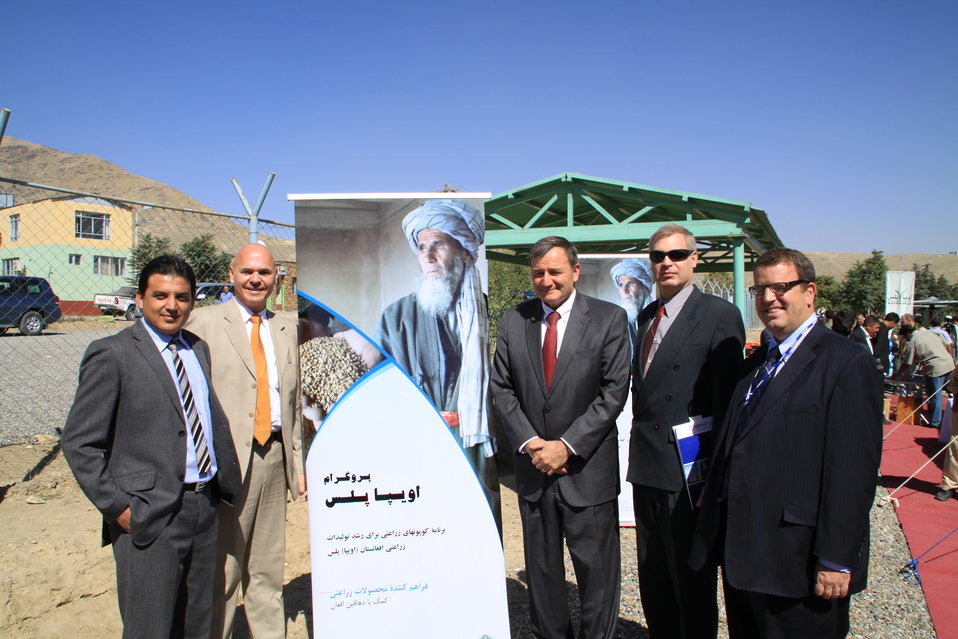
AVIPA Plus Wheat Seed Distribution 101005

US Ambassador Karl Eikenberry and USAID Acting Mission Director Kevin Brownawell joined the Minister of Agriculture, Irrigation and Livestock, H.E. Minister Mohammed Rahimi in signing a Memorandum of Understanding and distributing vouchers to area farmers for wheat and fertilizer.

US Ambassador Karl Eikenberry and USAID Acting Mission Director Kevin Brownawell joined the Minister of Agriculture, Irrigation and Livestock, H.E. Minister Mohammed Rahimi in signing a Memorandum of Understanding and distributing vouchers to area farmers for wheat and fertilizer.

US Ambassador Karl Eikenberry and USAID Acting Mission Director Kevin Brownawell joined the Minister of Agriculture, Irrigation and Livestock, H.E. Minister Mohammed Rahimi in signing a Memorandum of Understanding and distributing vouchers to area farmers for wheat and fertilizer.